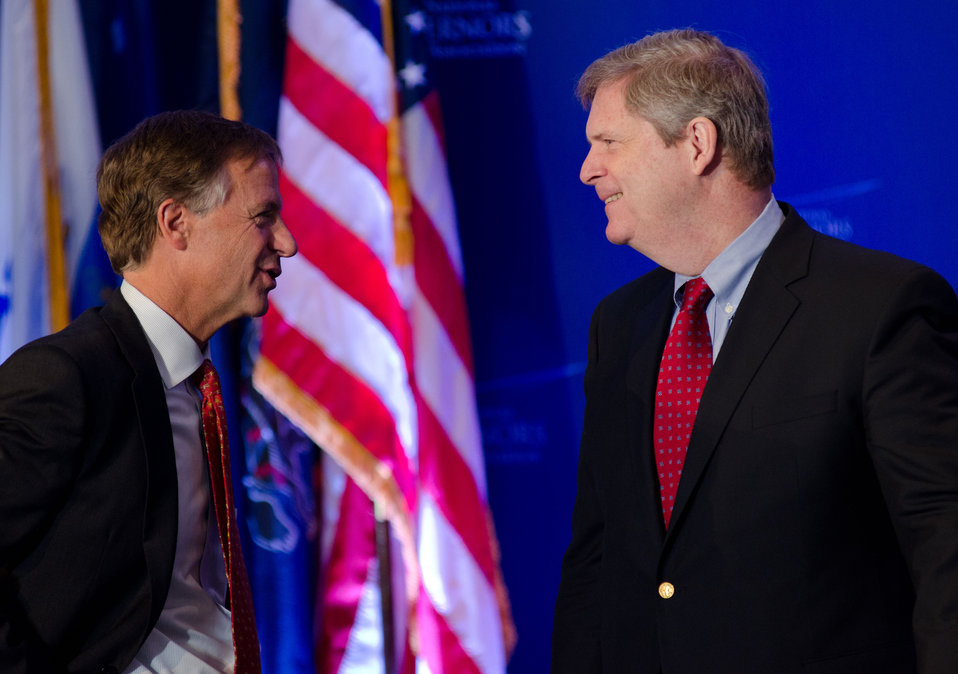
Tennessee - Governor Bill Haslam (left) welcomes Agriculture Secretary Tom Vilsack (right) as guest speaker at the National Governors Association Education, Early Childhood and Workforce Committee meeting in Washington, D.C., on Sunday, February 26, 2012.